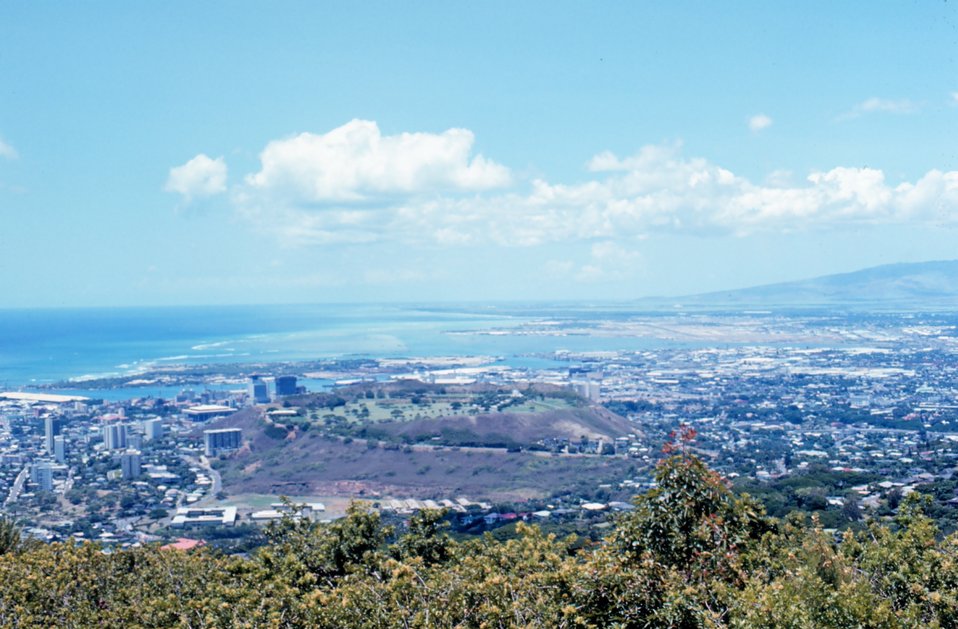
View of Honolulu from St. Louis Heights